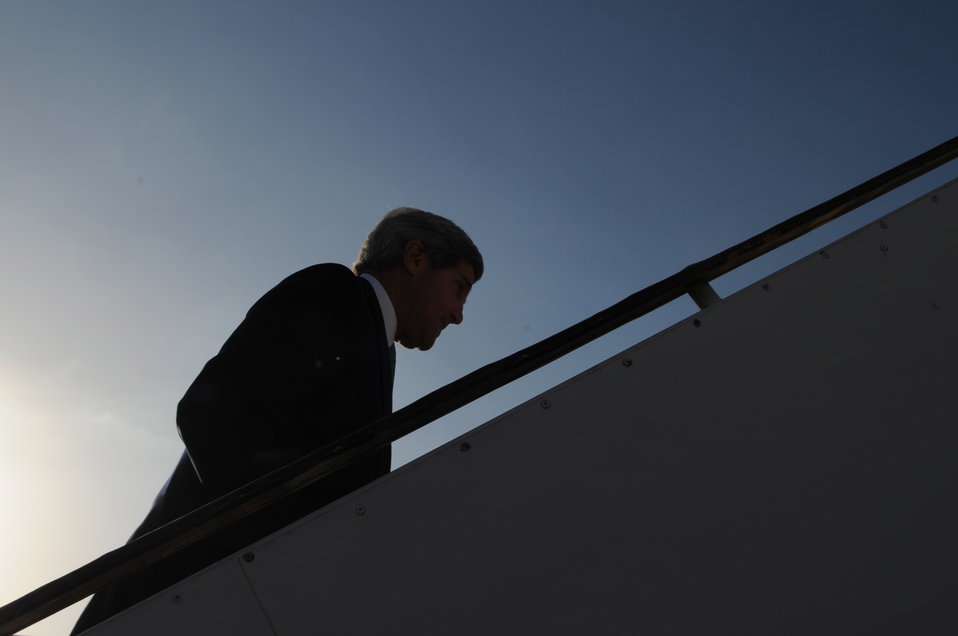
Secretary Kerry Departs After Day Trip to Israel

U.S. Secretary of State John Kerry boards his Air Force jet for a flight to Paris, France, after a day trip to Israel and a meeting in Jerusalem with Prime Minister Benjamin Netanyahu on September 15, 2013.